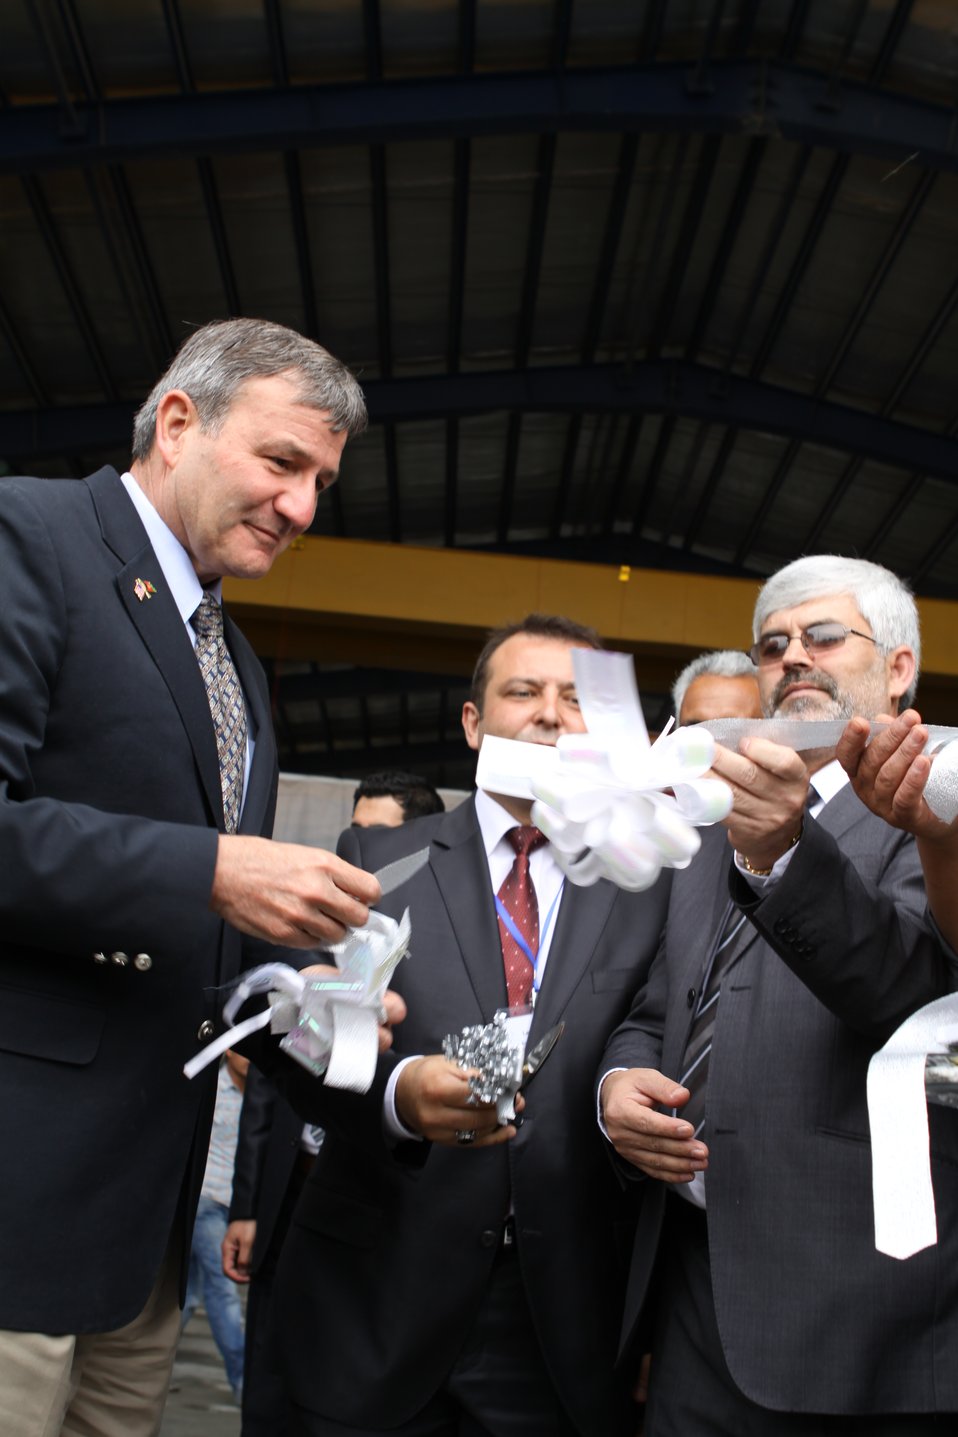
100525 Hirat Marble Conference 088